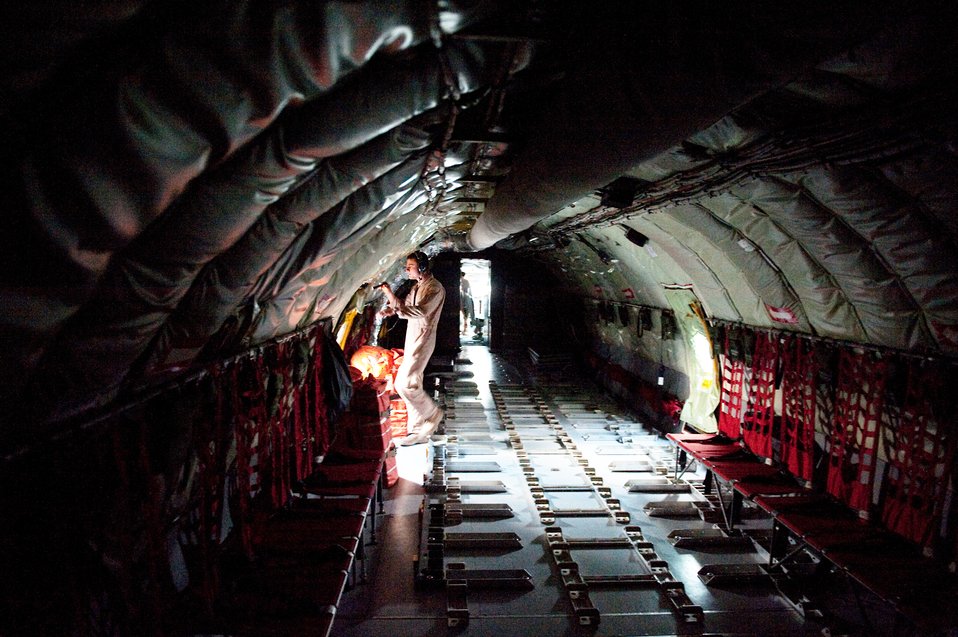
KC-135 crews prepare for mission

Senior Airman Andrew Deck, 340th Expeditionary Air Refueling Squadron boom operator, conducts a KC-135 Stratotanker preflight check, Dec. 2, 2009, in Southwest Asia.